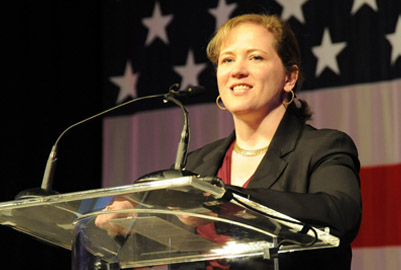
Ms. Conaton at AFGSC symposium

Undersecretary of the Air Force Erin C. Conaton discusses how critical the Air Force nuclear and global strike missions are to the United states during the Air Force Global Strike Command Technology and Innovation Symposium Nov. 17, 2010, in Shreveport, La. Ms. Conaton emphasized that the strengthening the nuclear enterprise is a top priority for Air Force leaders.